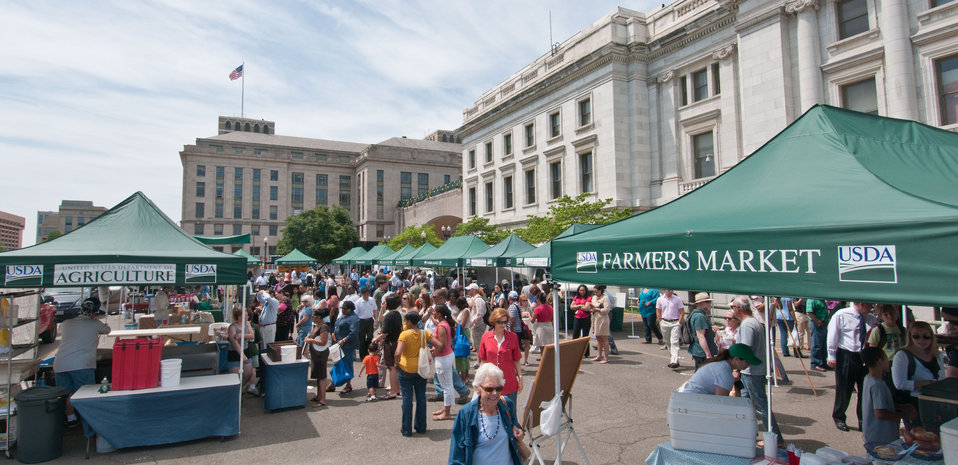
USDA Farmers Market on Friday, Jun 3, 2011 in Washington, DC. The USDA Farmers Market is located at the corner of 12th Street and Independence Avenue and will be open every Friday from 10:00 a.m. - 2:00 p.m. through November 18th. Special events will be happening every Friday at the market and at the adjacent People's Garden all season.